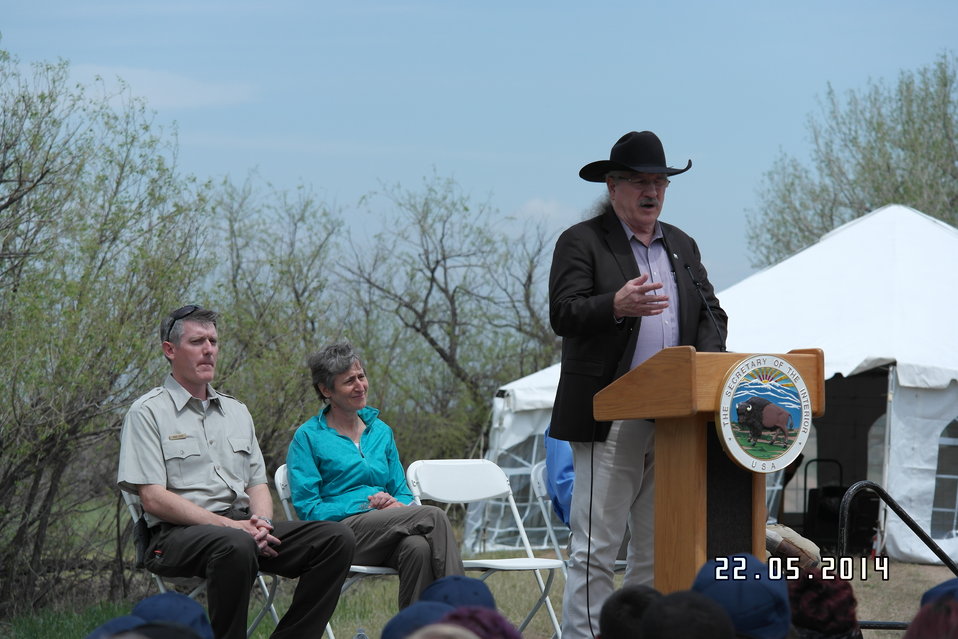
Secretary Jewell Announces $6.7 for Youth Conservation Jobs

Jewell made the announcement at an event at Rocky Mountain Arsenal National Wildlife Refuge outside Denver, Colorado, where she was joined by U.S. Department of Agriculture (USDA) Deputy Under Secretary for Natural Resources and the Environment Arthur “Butch” Blazer; Greg Knadle, Vice President for Government Relations of the National Fish and Wildlife Foundation (NFWF); Refuge Manager David Lucas and youth corps members of Groundwork Denver.